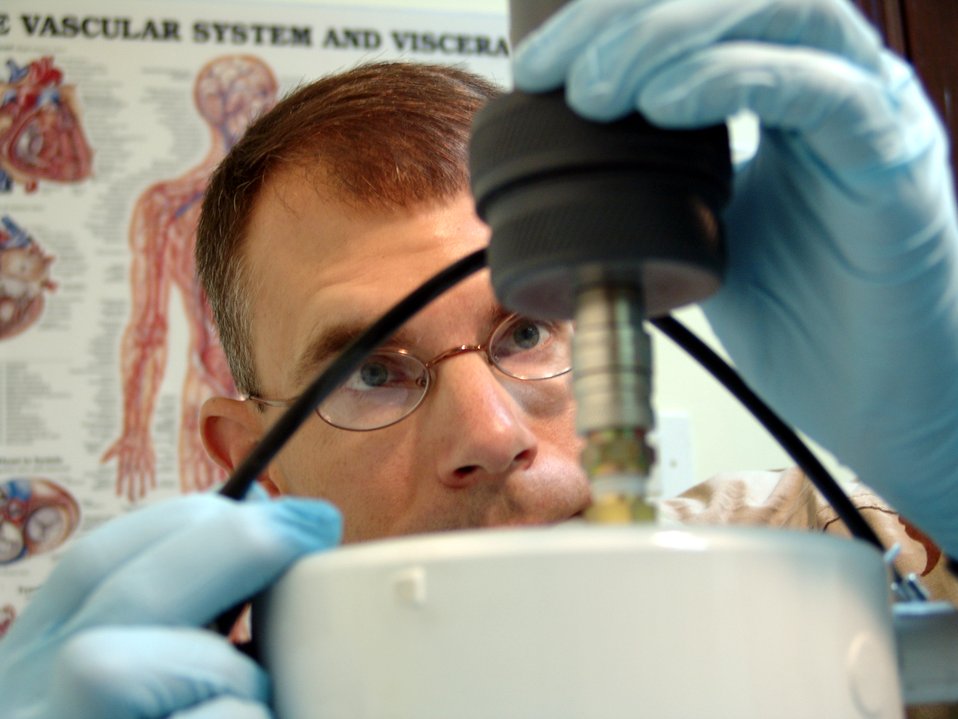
Sample time

SOUTHWEST ASIA -- Maj. Philip Goff attaches an air separator filter assembly to an air sampler. As a bioenvironmental engineer at a forward-deployed location, Major Goff compiles long-term environmental health data gathered from air samples for the 386th Air Expeditionary Wing. Air sampler collects pathogens, pollen and man-made pollutants that can be measured and documented to predict and prevent illness trends. Major Goff, of the 386th Expeditionary Medical Group, is deployed from McGuire Air Force Base, N.J.